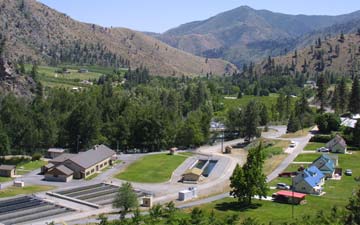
Entiat National Fish Hatchery

As aerial view of Entiat National Fish Hatchery, which is one of three fish hatcheries in the Leavenworth Fish Hatchery Complex, and the surrounding hillsides. Entiat NFH is located in north central Washington.